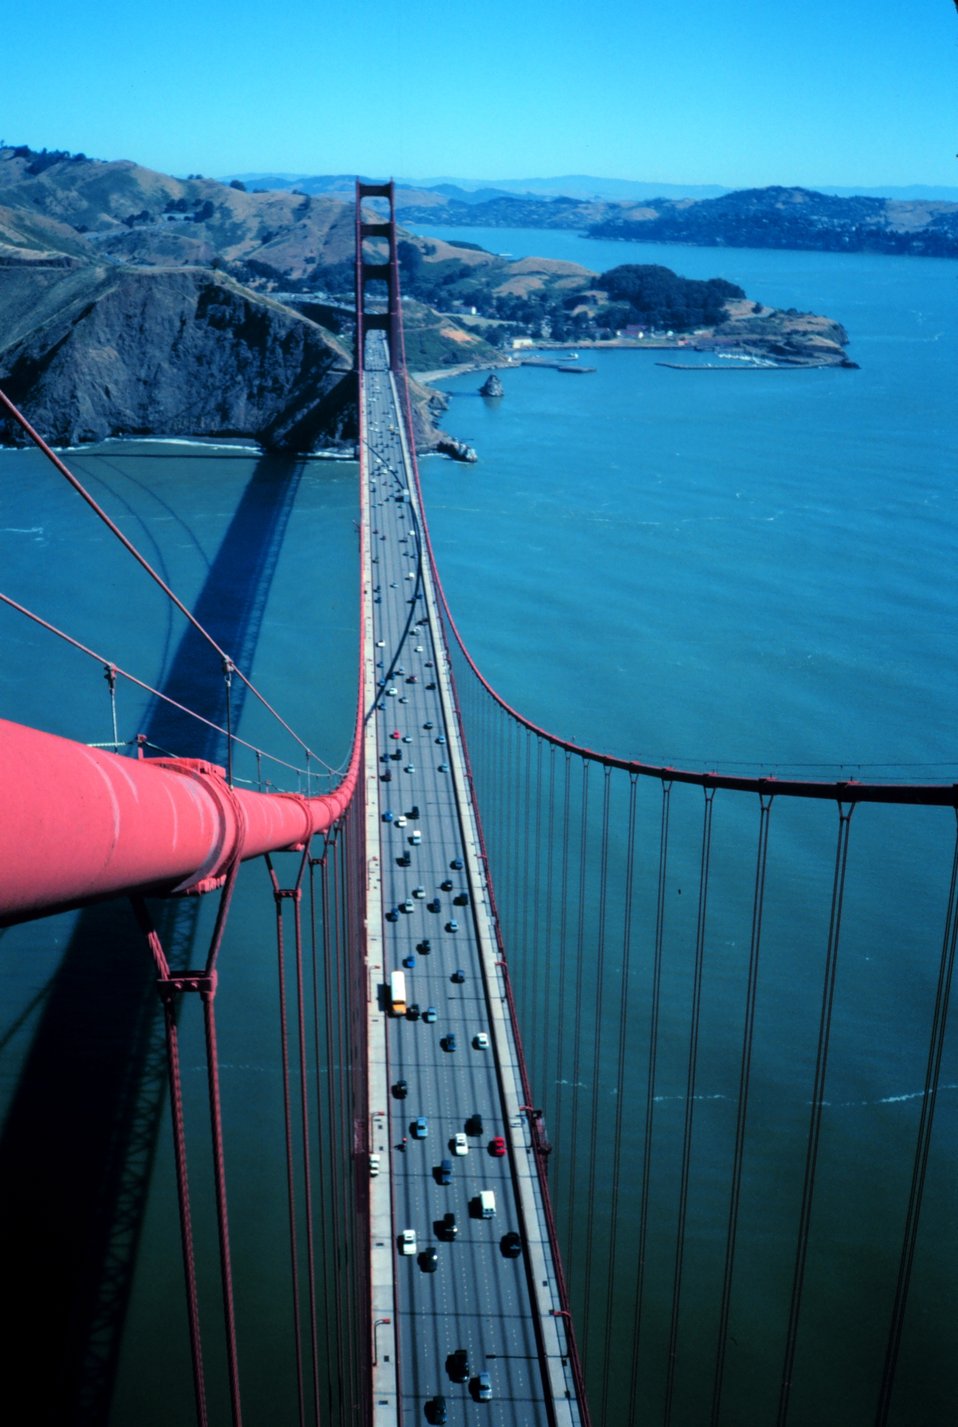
View from the top of the south tower of the Golden Gate Bridge looking north.